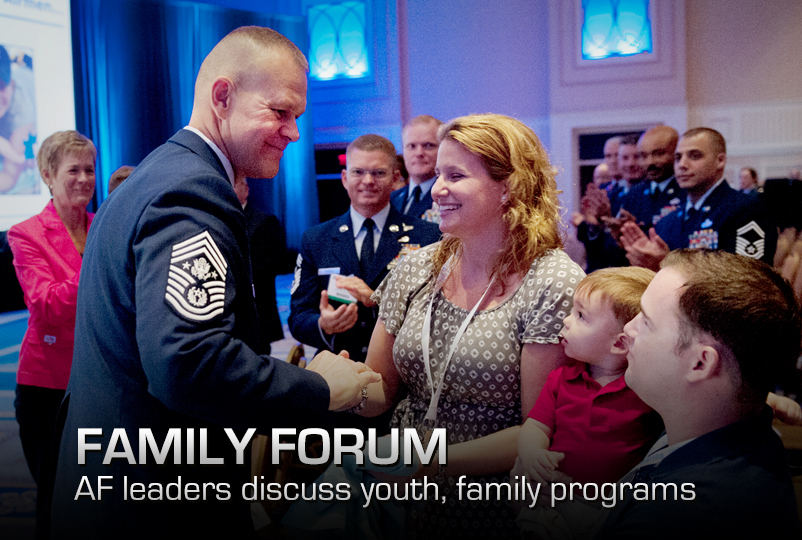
Family Forum